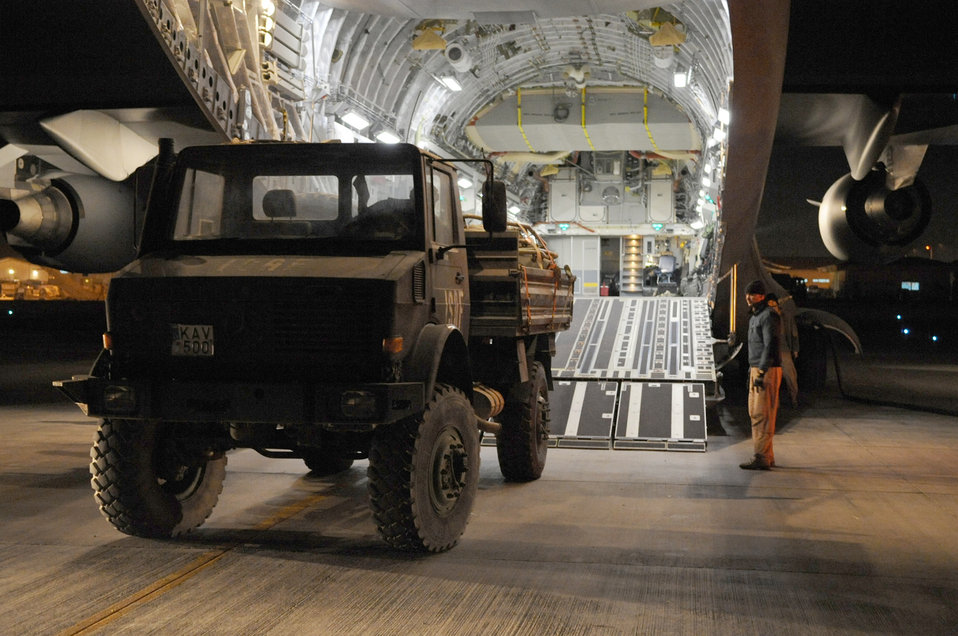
Three-day mission

Crew members from the Heavy Airlift Squadron at Papa, Hungary, and Lithuanian soldiers load Lithuanian Army vehicles on a C-17 Globemaster III Dec. 9, 2010, at Kabul, Afghanistan. The three-day mission will span about 7,000 miles covering the countries of Hungary, Poland, Afghanistan and Lithuania with more than 75,000 tons of cargo.